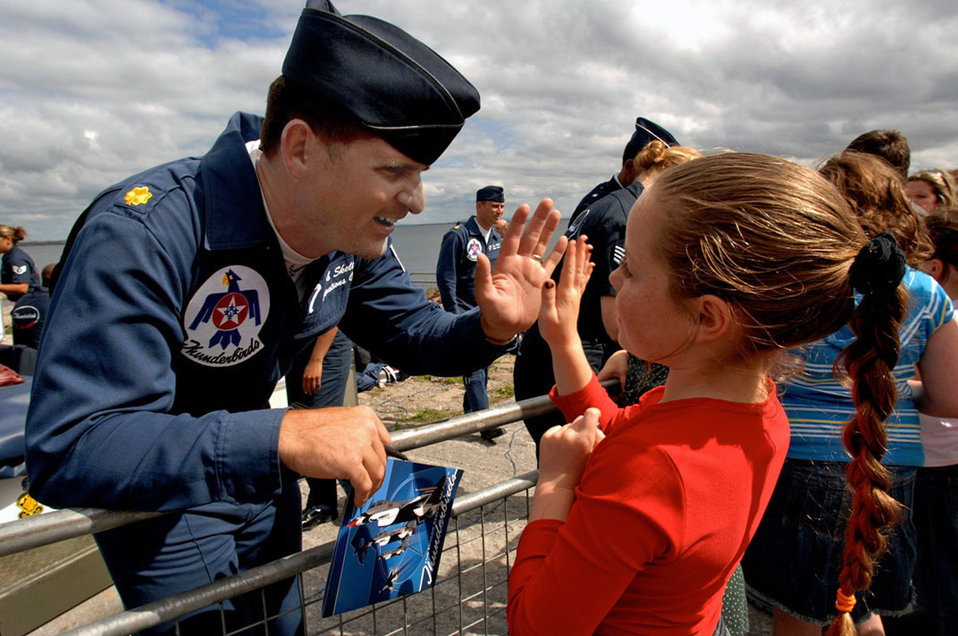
Thunderbirds begin European good-will tour

Maj. Rob Skelton, the Air Force Thunderbirds operations officer, greets a young girl at the Salthill Air Show in Galway, Ireland, June 24. This is the first time the Thunderbirds have performed over Irish soil. More than 100,000 people attended the air show, which was the team's first stop on their 2007 European Goodwill Tour.